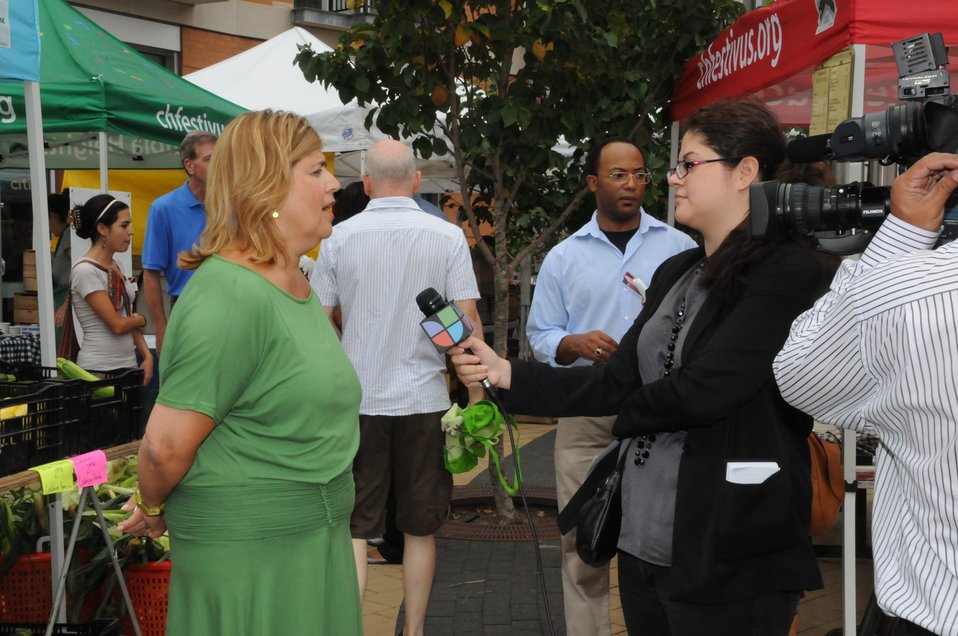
Anne Alonzo Interviews with Univision

AMS Administrator Anne Alonzo speaks to a Univision reporter at a National Farmers Market Week kick-off event held at the Columbia Heights Community Marketplace in Washington, D.C.